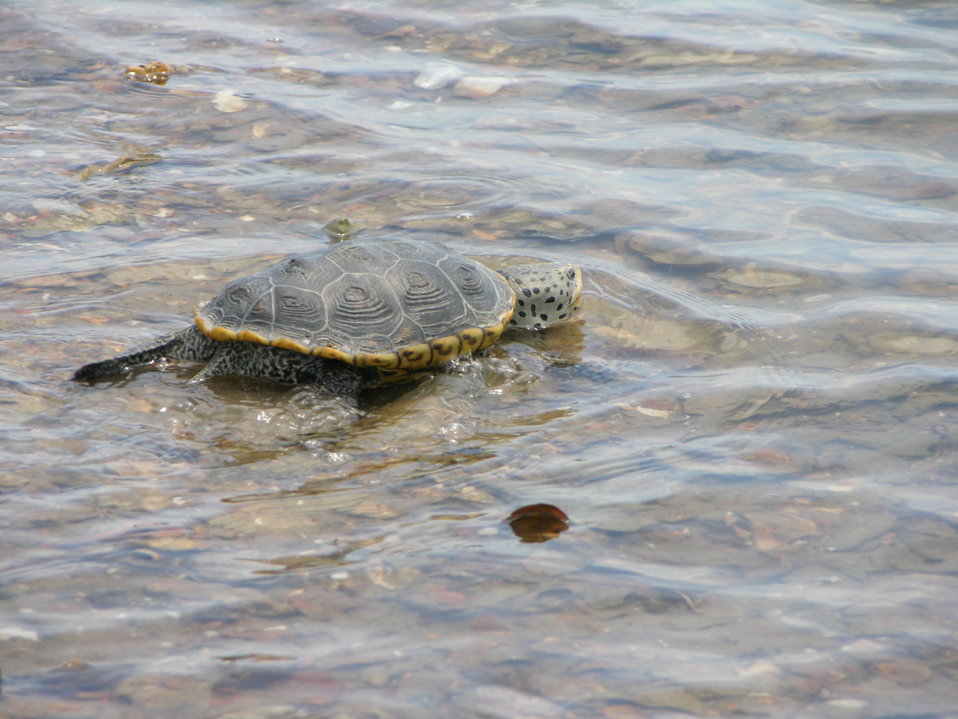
Diamondback taking a swim

The Grand Bay National Estuarine Research Reserve is researching the diamondback terrapin turtle, whose habitat is likely to be inundated as the sea rises.